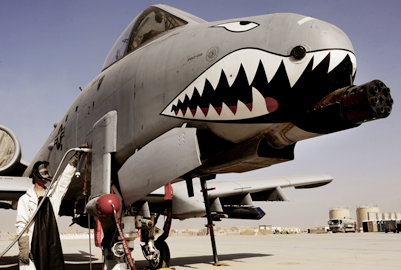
Kandahar flying mission consolidation

Staff Sgt. Tom Wilson fills an A-10C Thunderbolt II with liquid oxygen, Jan. 11, 2011, at Kandahar Airfield, Afghanistan. The 75th Expeditionary Fighter Squadron recently moved their assets to the other side of the flightline, marking the first of many moves toward consolidating the wing's missions. Sergeant Wilson is a crew chief assigned to the 451st Expeditionary Aircraft Maintenance Squadron.